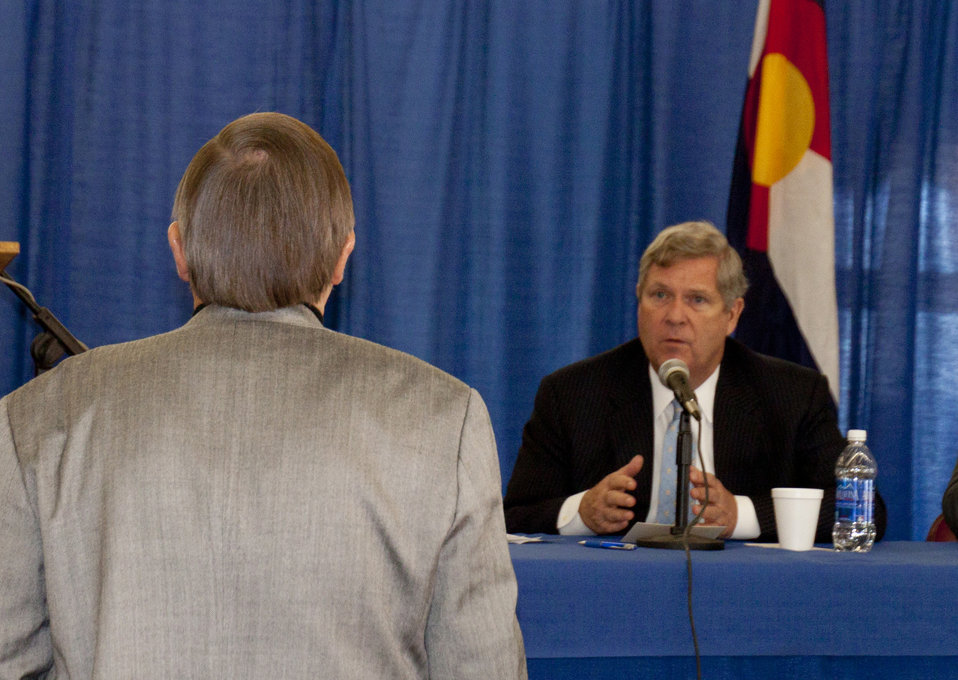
Agriculture Secretary Tom Vilsack listens to a question audience member Allen Barber at the Forum and Panel Discussion “Trade and Exports: Bringing Rural and Urban Development Together” at the Colorado State Fairground, 4H Auditorium in Pueblo, CO., on Thursday, October 11, 2012.